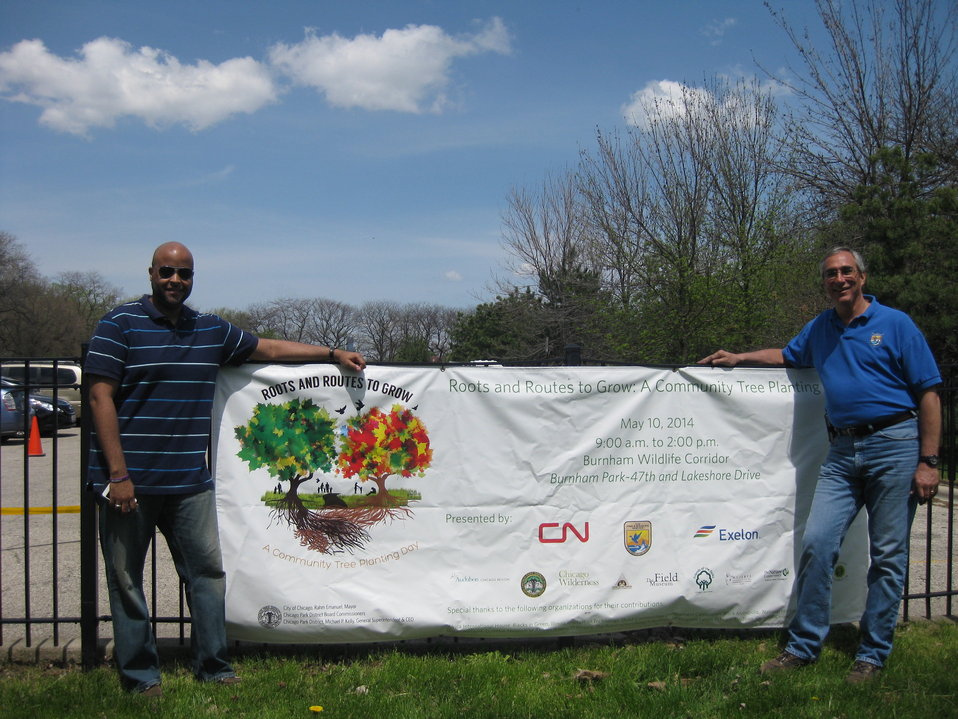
Tom Melius and Kevin Davis at Community Planting Sign

Chicago Park District Burnham Corridor Community Planting Day, - May 10, 2014
Photo by USFWS; Louise Clemency